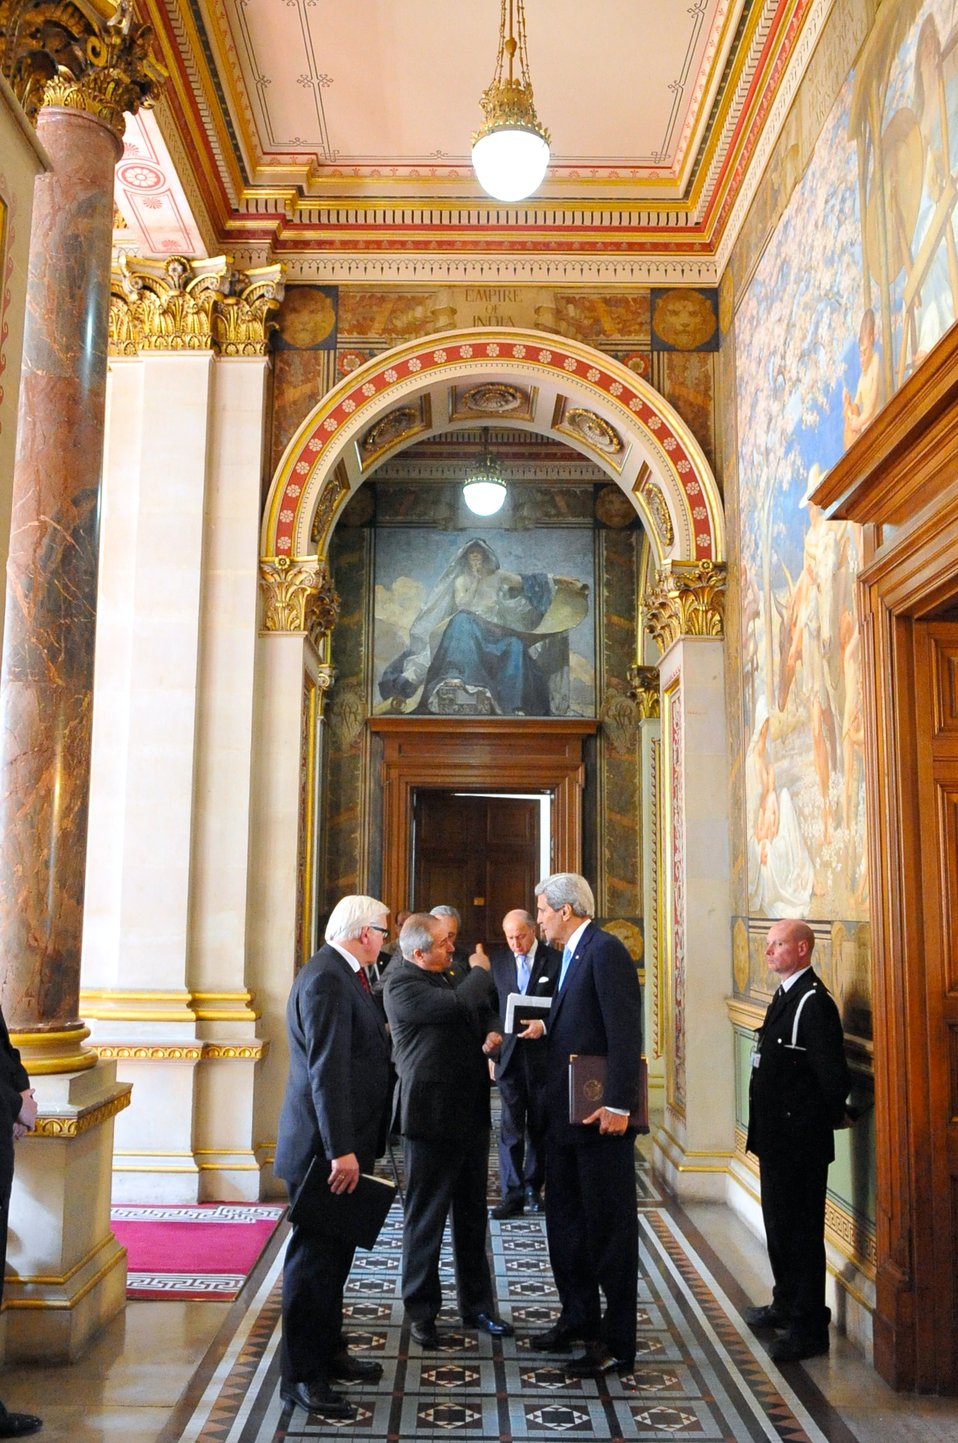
Secretary Kerry Discusses Issues With Counterparts in London

U.S. Secretary of State John Kerry, Jordanian Foreign Minister Nasser Judeh, and German Foreign Minister Frank-Walter Steinmeier discuss issues amid a series of ministerial meetings at the Foreign and Commonwealth Office in London, United Kingdom, on May 15, 2014.